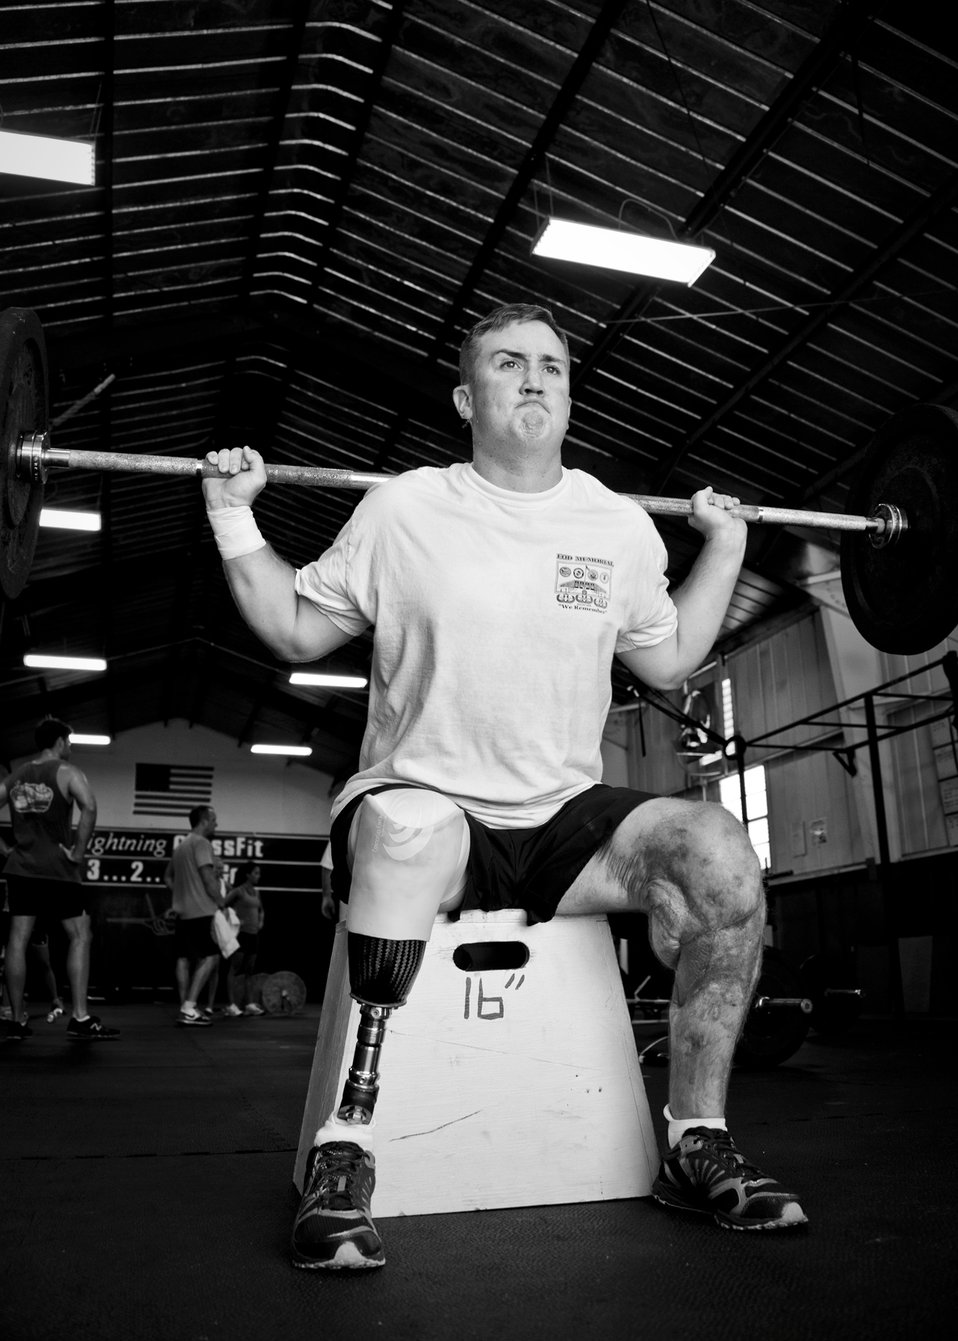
SSgt David Flowers

Staff Sgt. David Flowers adds weighted squats into his workout routine June 28, 2011, at Eglin Air Force Base, Fla.The explosive ordnance technician was officially returned to duty in June after he lost his right leg and incurred major damage to his left leg in a land mine explosion in Afghanistan in 2009. In August, he is scheduled to begin training to be an EOD instructor at the Navy EOD School. Flowers is assigned to 366th Training Squadron, Det. 3.